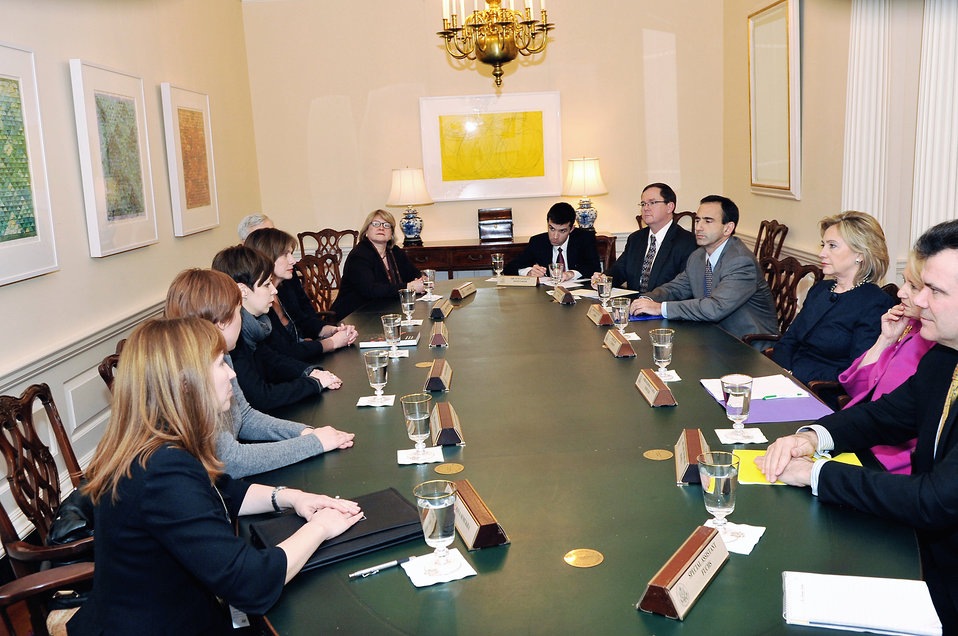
Secretary Clinton Hosts a Meeting With Belarusian American Activists

U.S. Secretary of State Hillary Rodham Clinton hosts a meeting with Belarusian American Activists at the U.S. Department of State in Washington, D.C., on January 6, 2010.